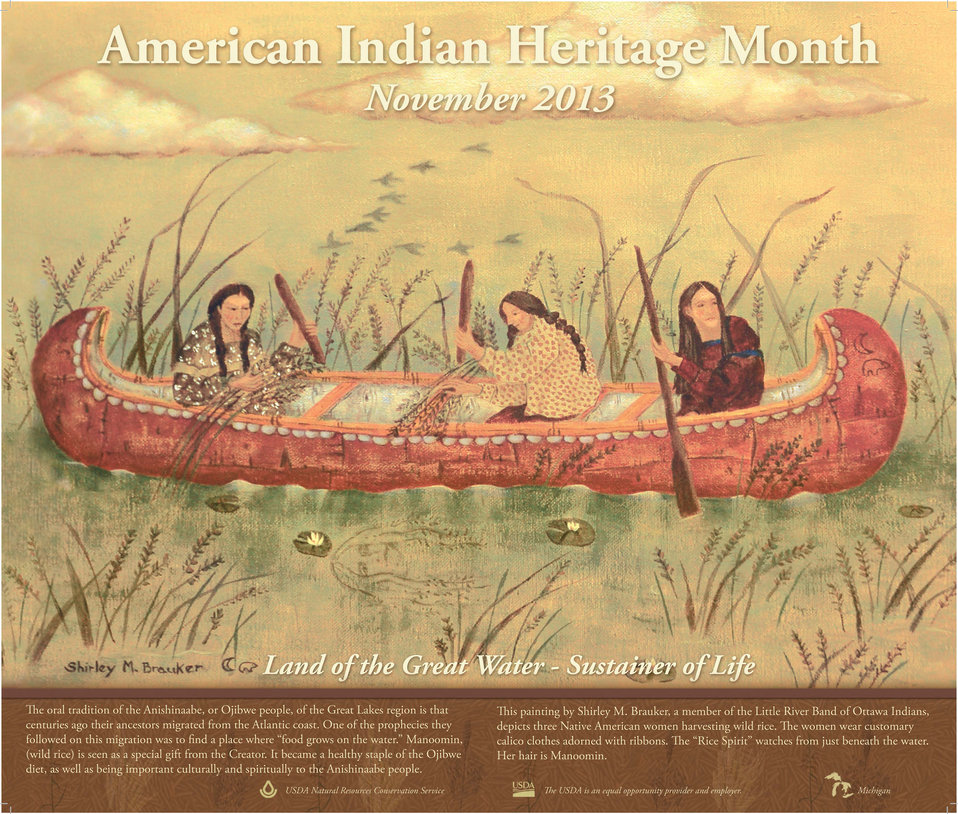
NativeAmMonth2

Artist Shirley M. Brauker painted this poster, titled “Gathering Wild Rice,” which depicts three women in a canoe harvesting wild rice.